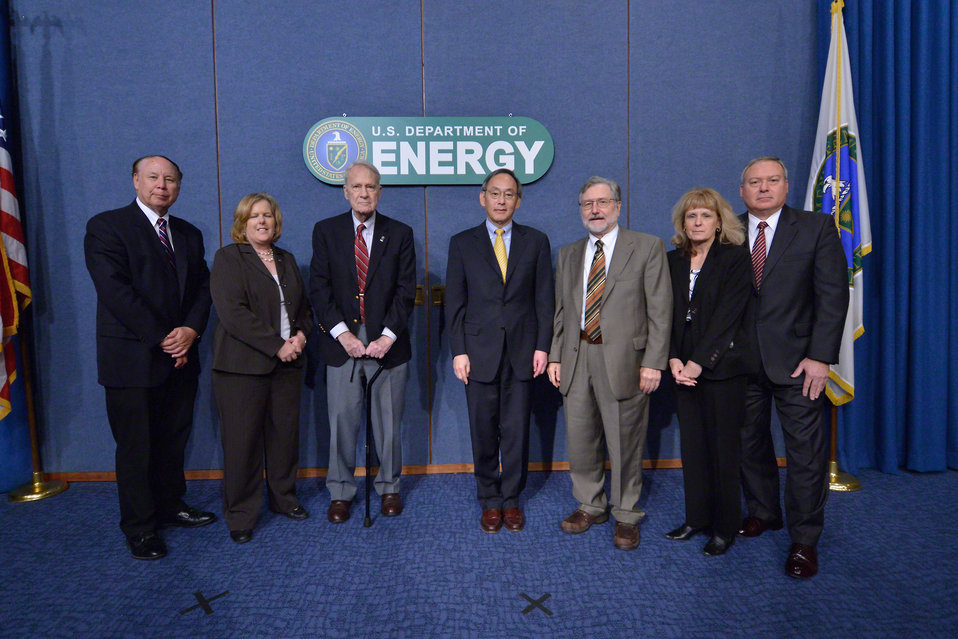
1 NNSA

Charter employees from the National Nuclear Security Administration with Secretary Steven Chu, current Secretary of Energy, and Secretary James Schlesinger, first Secretary of Energy.